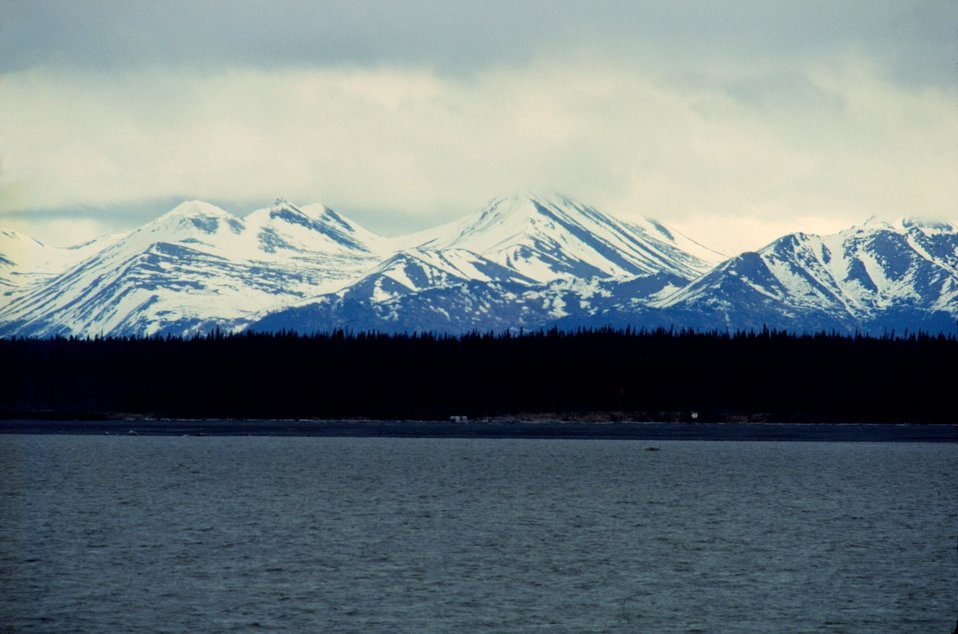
Upper Cook Inlet.